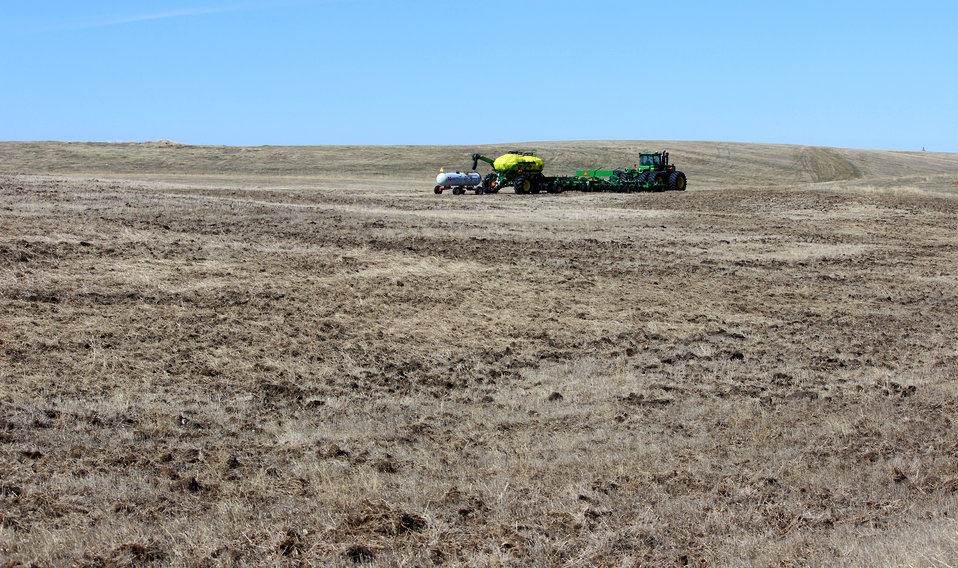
This Is The Horse and Plow of 2014

Don't make the mistake of thinking native prairie is hard to break, just because it is solid grass. With the weight and size of modern equipment, the soils and root masses yield easily to the disk and plow. However, many native areas are still rocky, gravelly, or sandy--which makes them less productive for farming. For some, the benefits of breaking this land, fertilizing, seeding, and harvesting outweigh the costs. Money is nearly always the driving factor, and policies set within the Farm Bill and other legislation can have a tremendous affect on what's profitable.